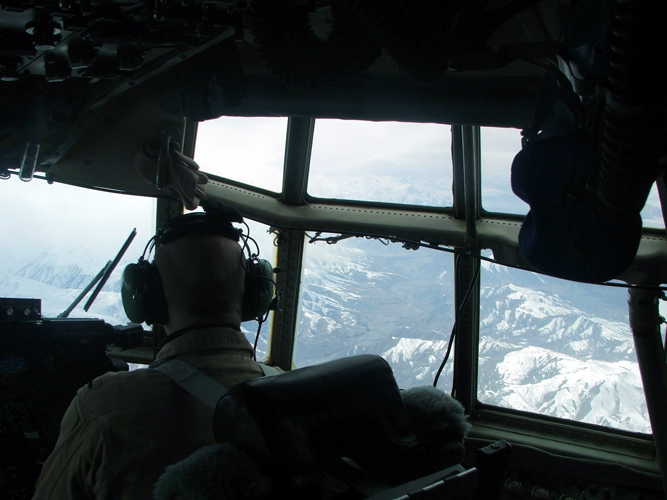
Airmen drop vital supplies to troops in Afghan mountains

OVER AFGHANISTAN -- A C-130 Hercules crew flies a humanitarian mission over the Afghan mountains on the way to Shin Kay, a remote village needing supplies.